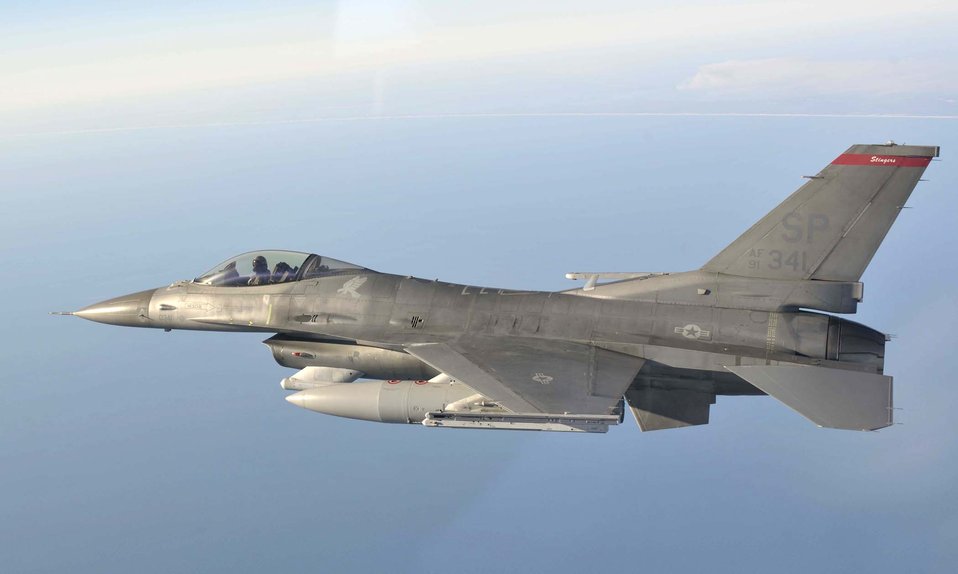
Air National Guard fighter wing preps for alert missions at Tyndall

An F-16 Fighting Falcon from the 179th Fighter Squadron, a subordinate unit of the 148th Fighter Wing out of Duluth, Minn., flies a mission over the Gulf of Mexico Jan. 27, 2011. The 148th FW is working with the 53rd Weapons Evaluation Group at Tyndall Air Force Base, Fla., for two weeks to train for their air sovereignty alert missions and to validate their newly-upgraded Block 50 F-16s.